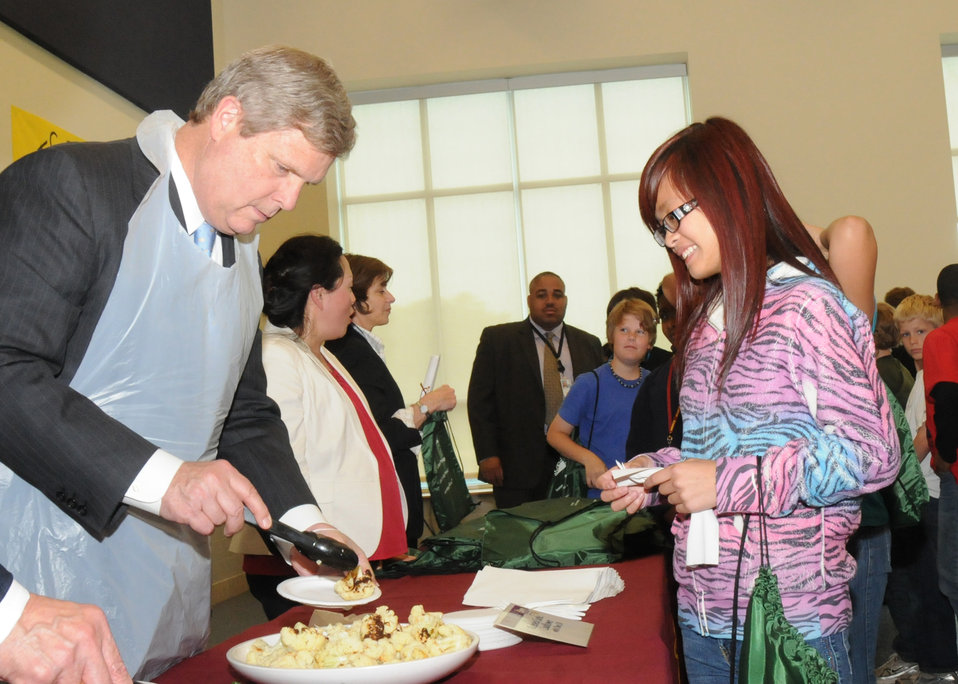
Agriculture Secretary Tom Vilsack serves a healthy snack of roasted garlic cauliflower with olive oil to 6th grade students at the Alice Deal Middle School in Northwest Washington, D.C., Alice Deal Middle School Principal Melissa Kim and D.C. Councilwoman Mary Cheh stand to the left of the Secretary handing out backpacks provided by the Food Nutrition Service for the students on Thursday, May 13, 2010. USDA photo 10di1358-189.